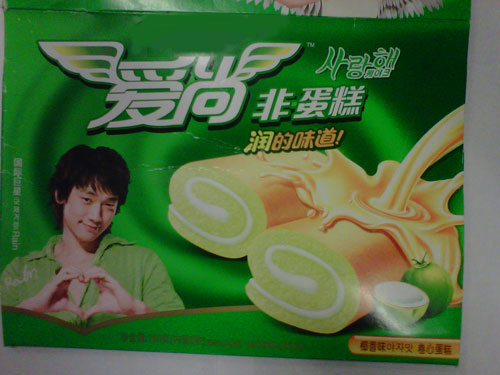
RECALLED - Rain Swiss Roll (Strawberry Flavor and Coconut Flavor)

April 20, 2011 - Product Recall - S&M (USA) Enterprise Corp Issues Allergy Alerts on Undeclared Eggs In Rain Swiss Roll
(Strawberry Flavor) and (Coconut Flavor).